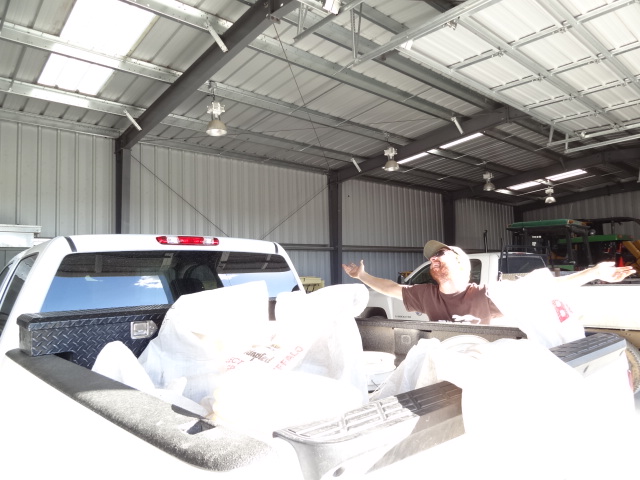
SCA Intern Work Completion at Marais des Cygnes National Wildlife Refuge

At the completion of his term, an SCA intern poses by his collection of native forb seeds.